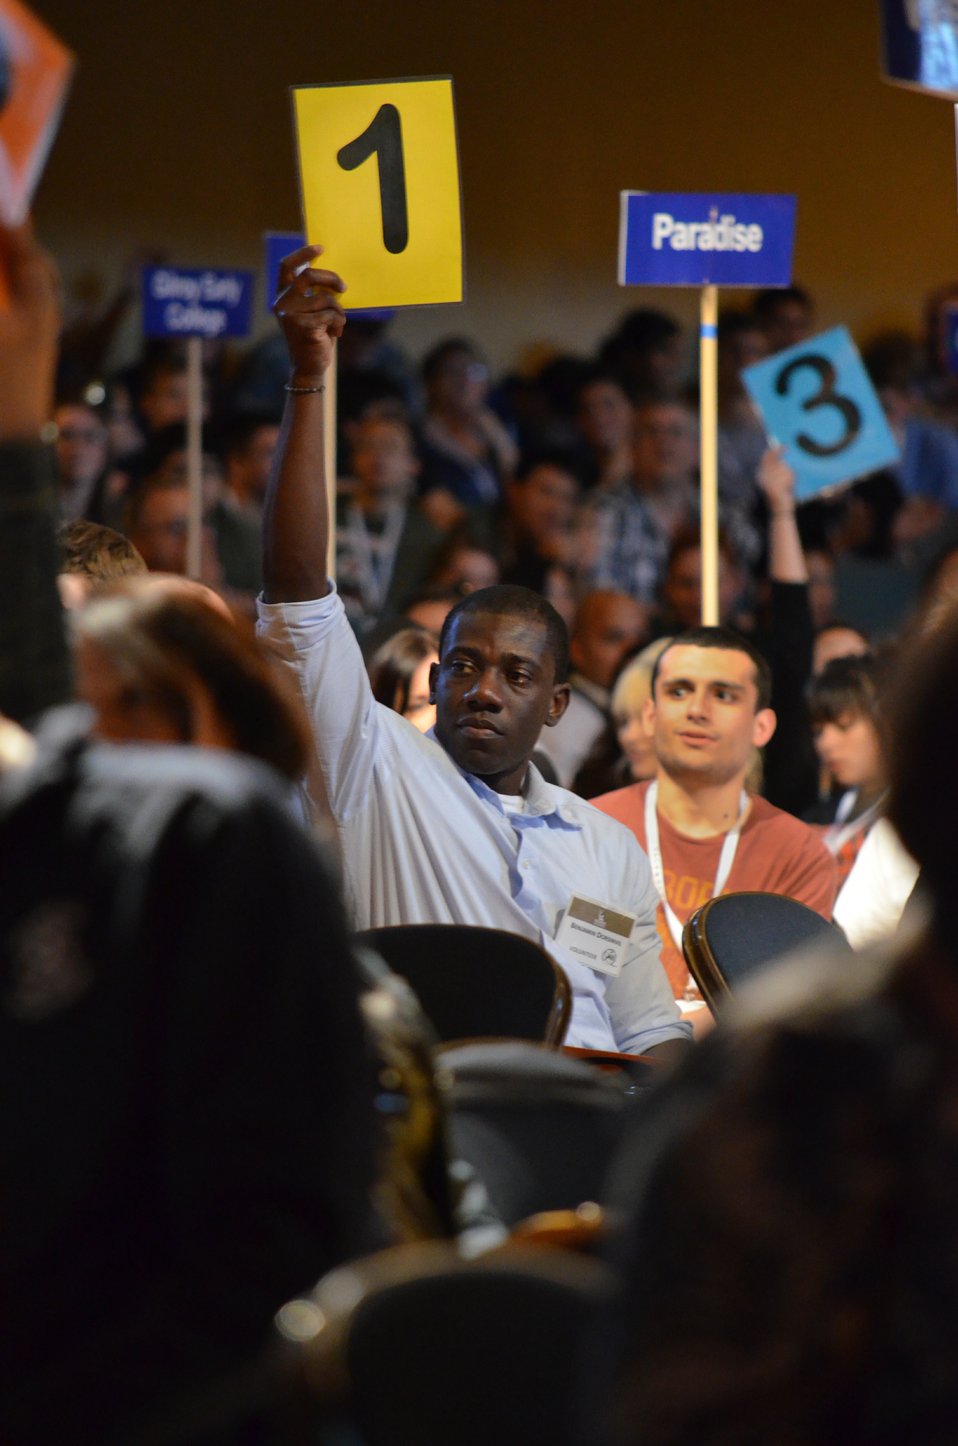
Ben Dorsinvil's team showing a correct answer

Ben Dorsinvil, an economist with the U.S. Army Corps of Engineers Sacramento District, flashes a score for the judges during the California Academic Decathlon, March 22, 2014 at the Memorial Auditorium in Sacramento, Calif. A total of six district employees volunteered their time during the three-day event, which determines who represents California during the national decathlon this April in Honolulu.